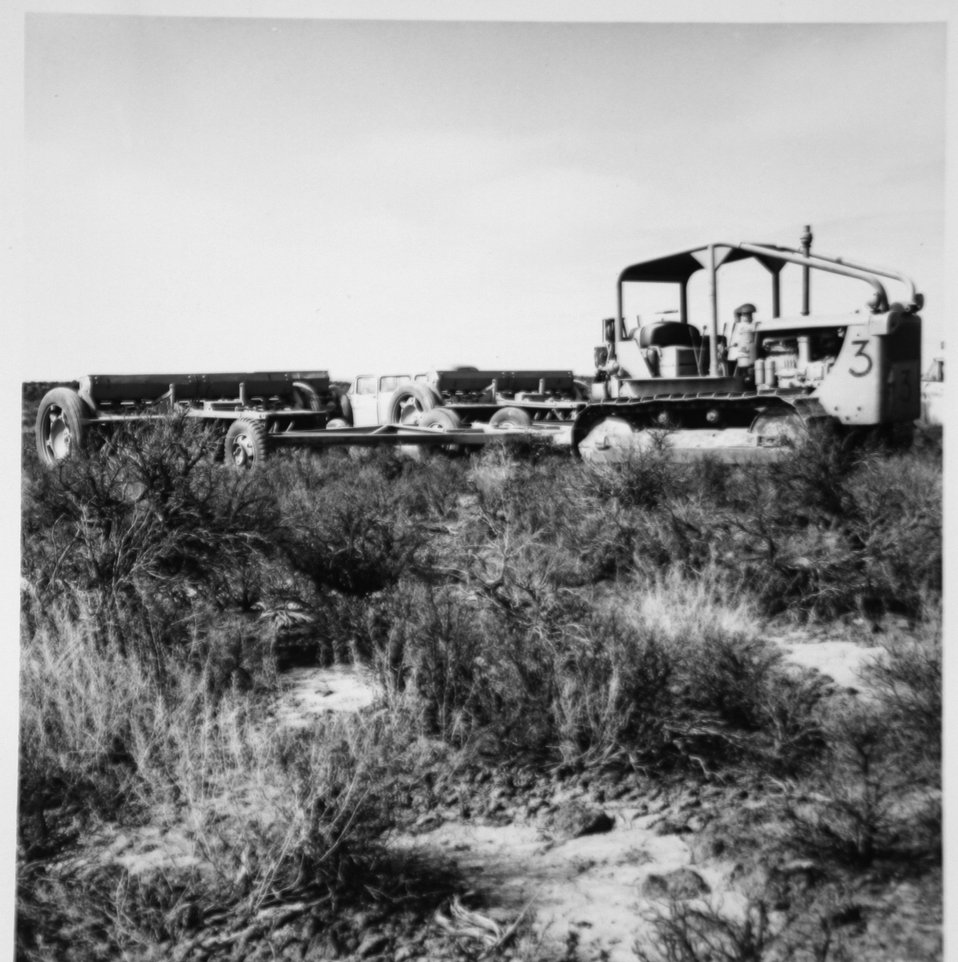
Three drill hitch Bruns District Septempber, 1964